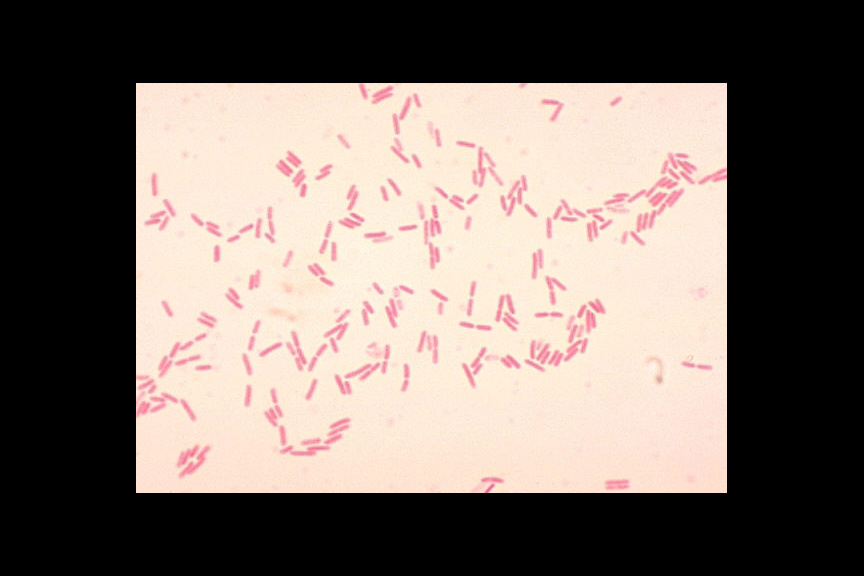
Bacillus alvei. Gram stain.